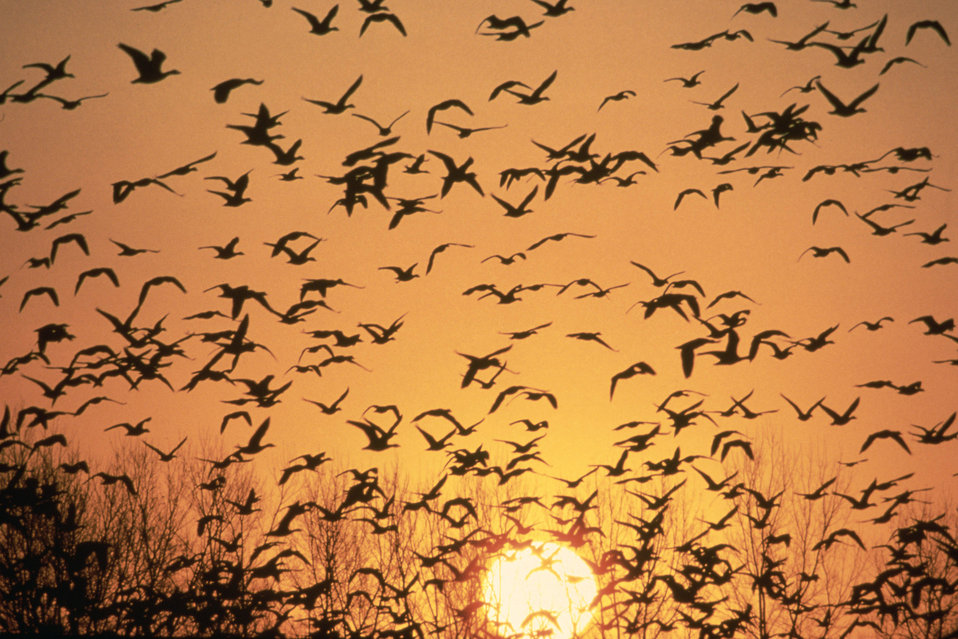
Geese at Sunrise

Photo credit: USFWS/Dave Menke

International collaboration and action is critical to increasing the resilience and adaptation of species that cross and depend on areas beyond U.S. borders